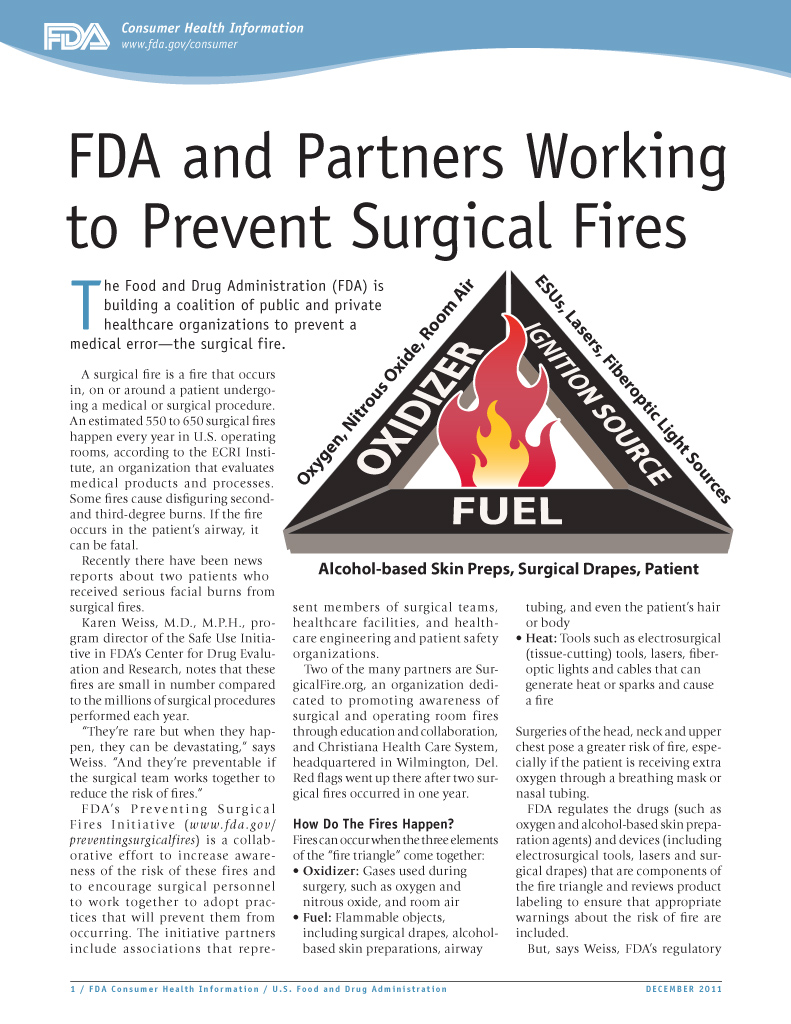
FDA and Partners Working to Stop Surgical Fires

The Food and Drug Administration (FDA) is building a coalition of public and private healthcare organizations to prevent a medical error - the surgical fire. For more on this topic, read this FDA Consumer Update: www.fda.gov/ForConsumers/ConsumerUpdates/ucm282810.htm

Consumer Updates are a quick and easy way to pick up important health information for you and your family. For a complete list of Consumer Updates see the Consumer Updates photo set: www.flickr.com/photos/fdaphotos/sets/72157624900896241/.

For the latest Consumer Updates go to: www.fda.gov/forconsumers/consumerupdates